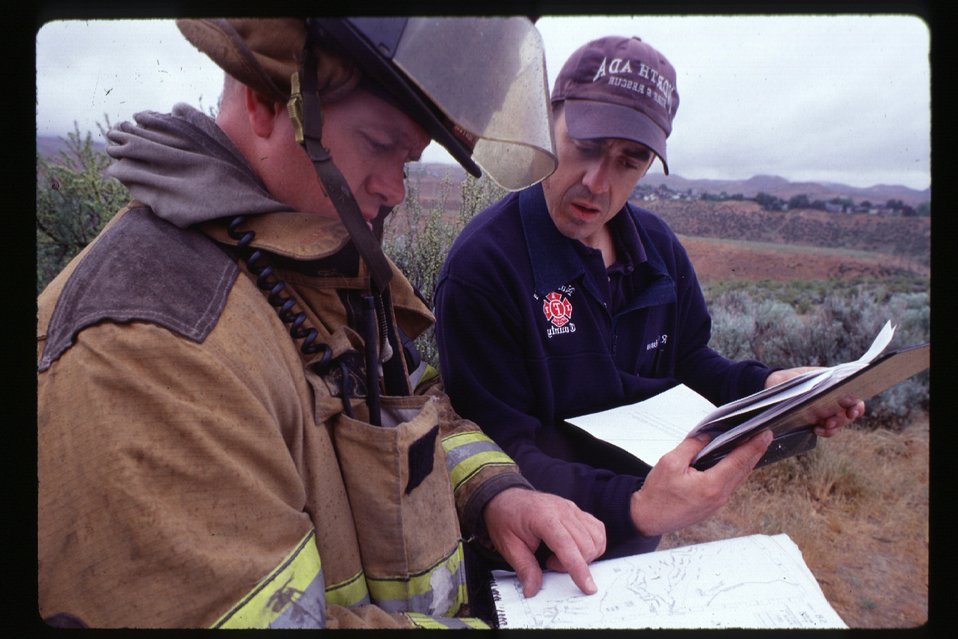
Fire fighter training Four Rivers Field Office LSRD Lower Snake River District